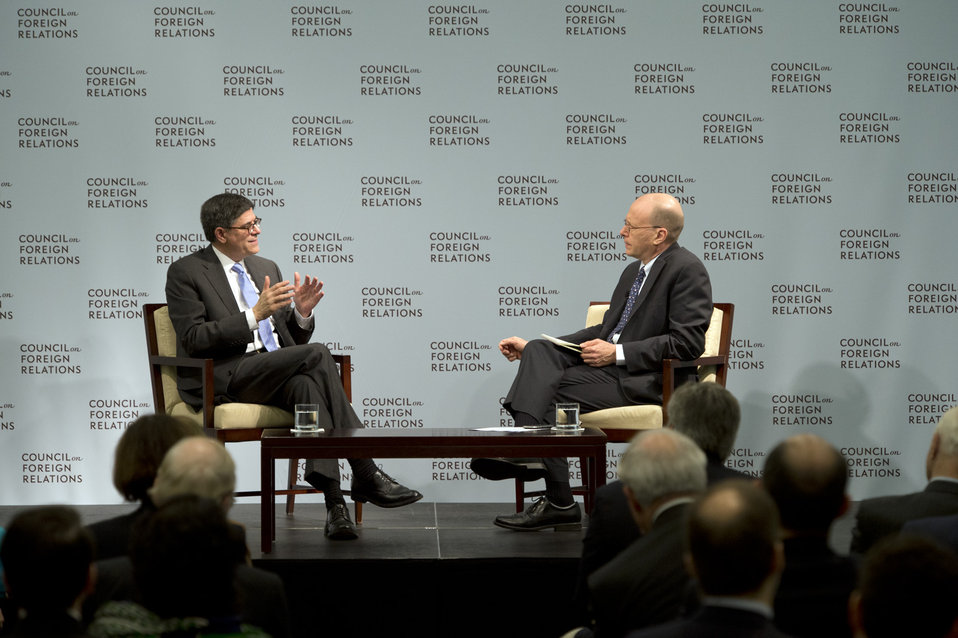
Secretary Lew at Council on Foreign Relations

January 16, 2014 – Secretary Lew discusses with Assistant Managing Editor and Executive Business Editor of The Wall Street Journal John C. Bussey the progress of the US economic recovery, financial reform, developments in the global economy, and the importance of Congress extending the nation’s borrowing authority at the Council of Foreign Relations in Washington, DC.